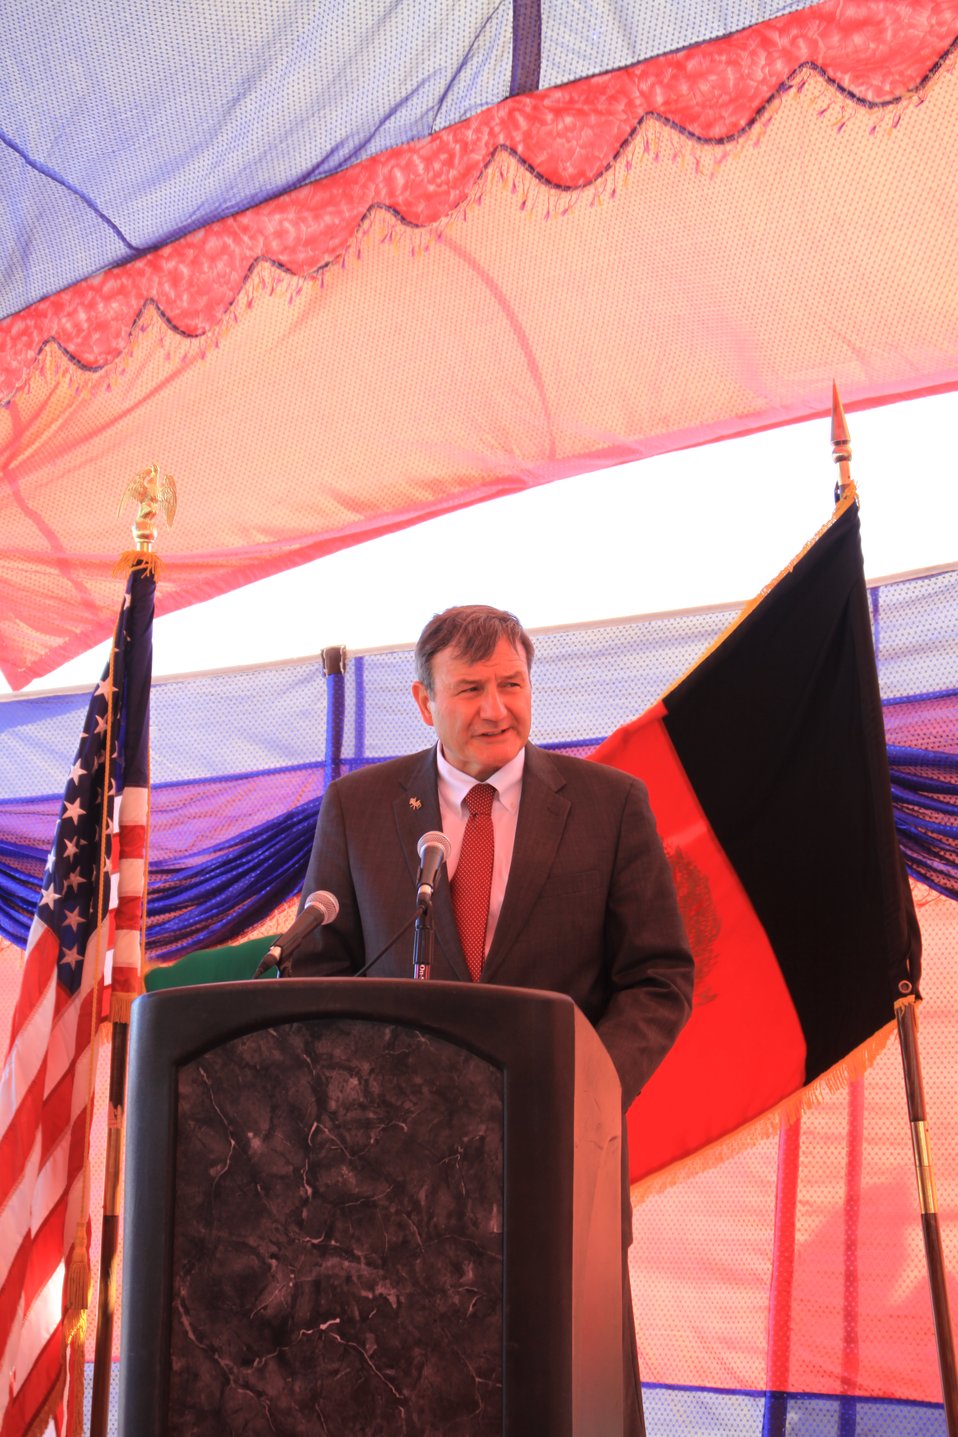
AVIPA Plus Wheat Seed Distribution 101005